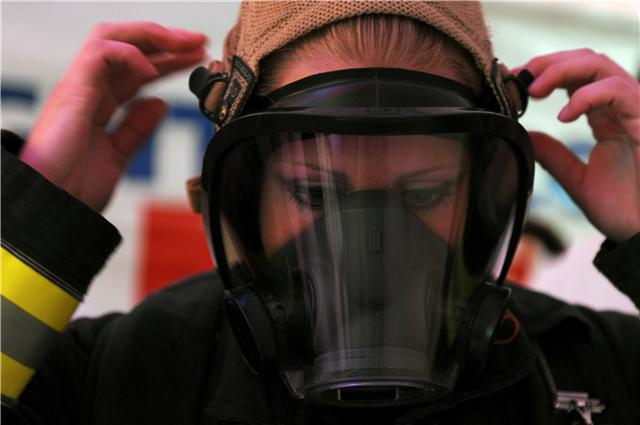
Gearing up

Staff Sgt. Jessica Packard puts on her oxygen mask as she gets ready to compete in the individual relay event Nov. 19, 2009, at the Scott Firefighter Combat Challenge in Las Vegas. Sergeant Packard took 3rd place overall in the female individual competition. She is stationed at Goodfellow Air Force Base, Texas.